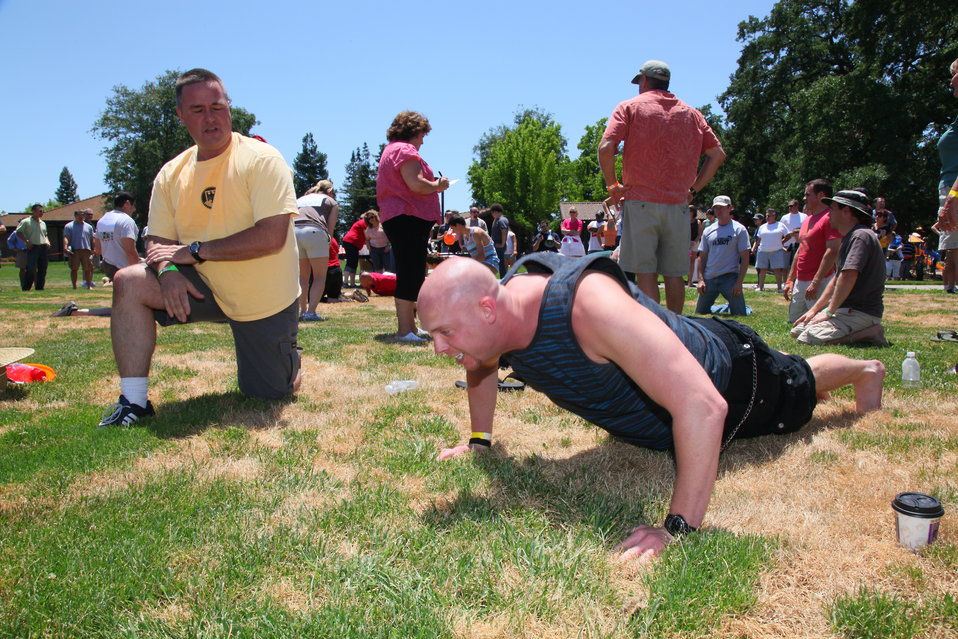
2011 Annual Picnic